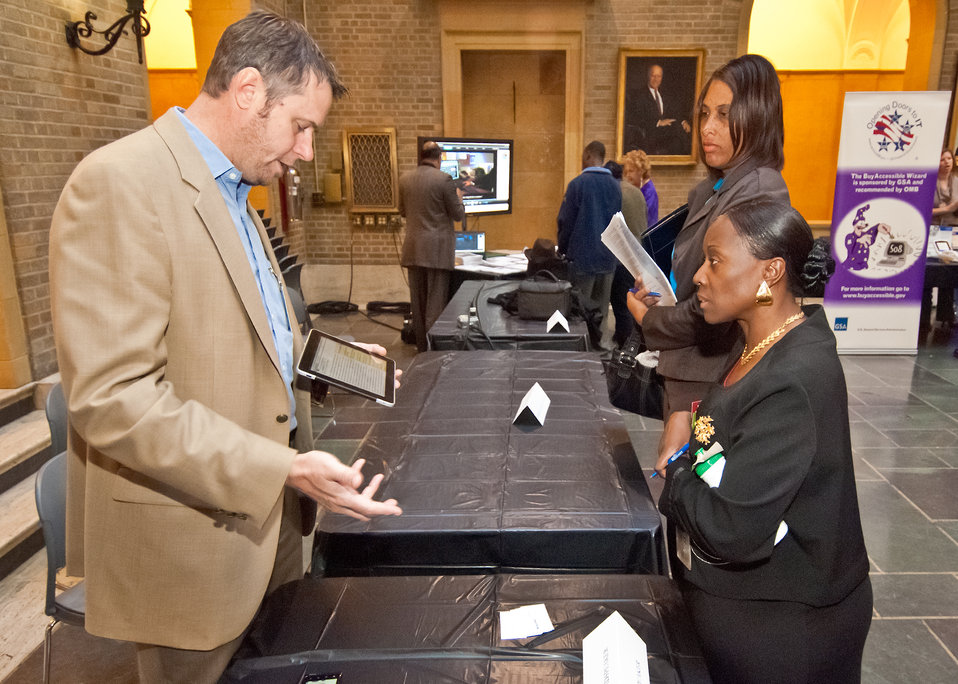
Chief Operations Officer of FEDVC Torsten Oberst (left) explains the how their software reads any web content/text into an audio Cloud service to Office of the Chief Information Officer employee Denise Lotson (right) at the U. S. Department of Agriculture (USDA) Section 508 and Disability Awareness Program in Washington, DC, on Monday, Oct. 31, 2011. Sponsored by the Office of the Chief Information Officer, the theme of the event was, “Turning the Key to Unlock and Eliminate Barriers by Providing Accessibility to All.” Section 508 applies to the development, procurement, maintenance or use of electronic and information technology allowing accessibility and awareness to promote inclusiveness to employees and the public with disabilities to information technology managed by the Federal government. Section 508 is part of the USDA’s Cultural Transformation Initiative to hire more employees with disabilities.